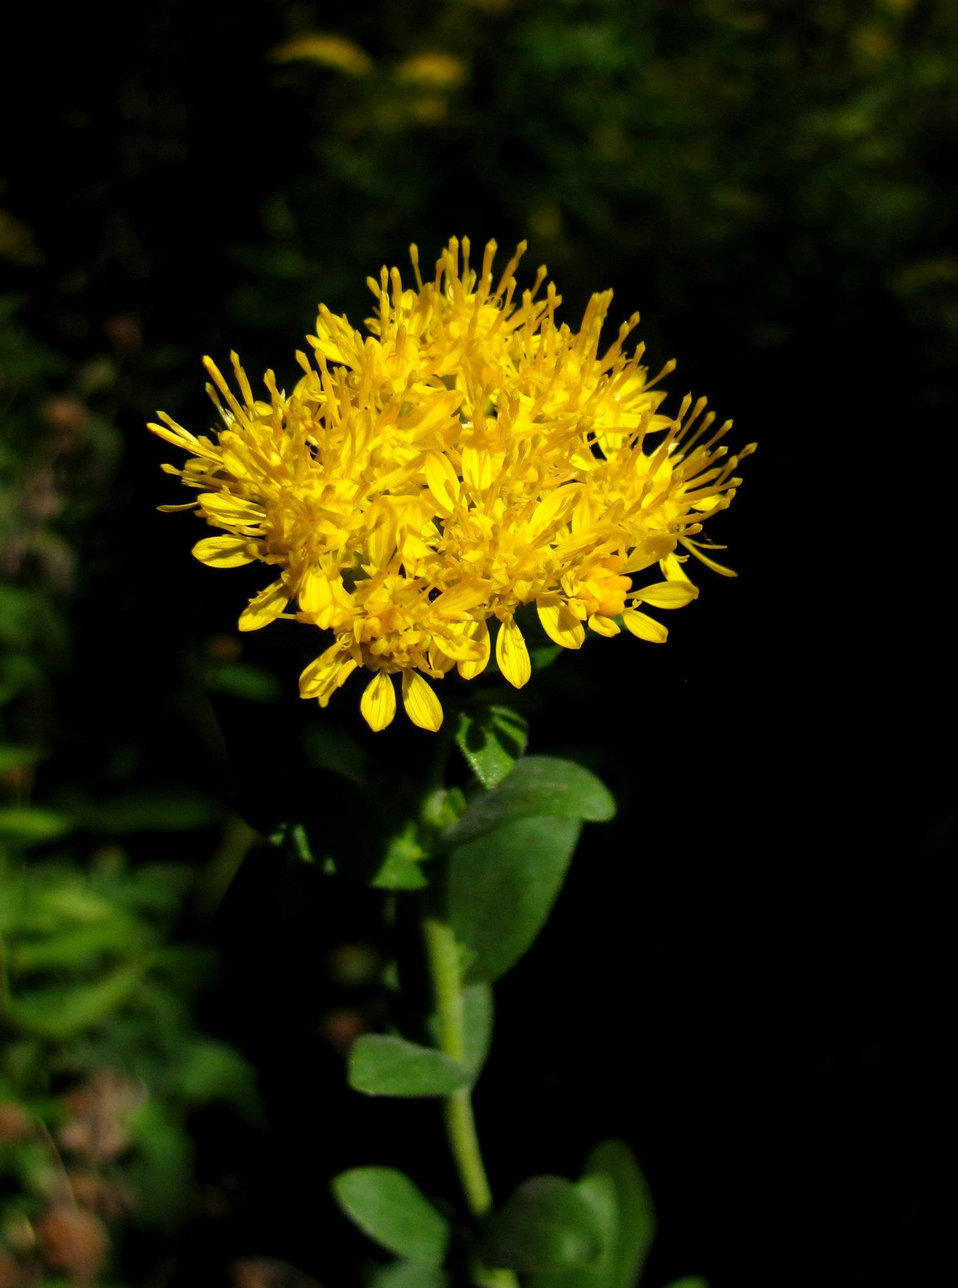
stiff goldenrod

Port Louisa National Wildlife Refuge, IA